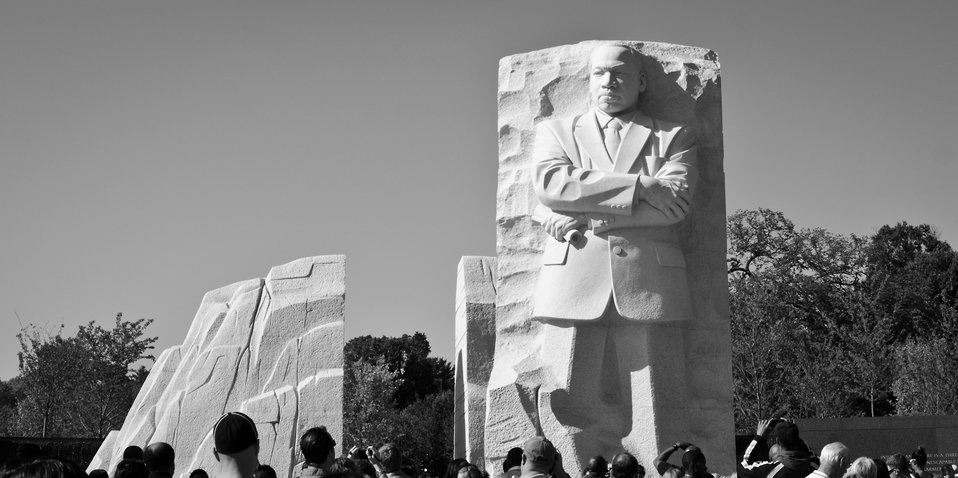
Martin Luther King, Jr. Memorial in Washington, DC, on Saturday, October 8, 2011.